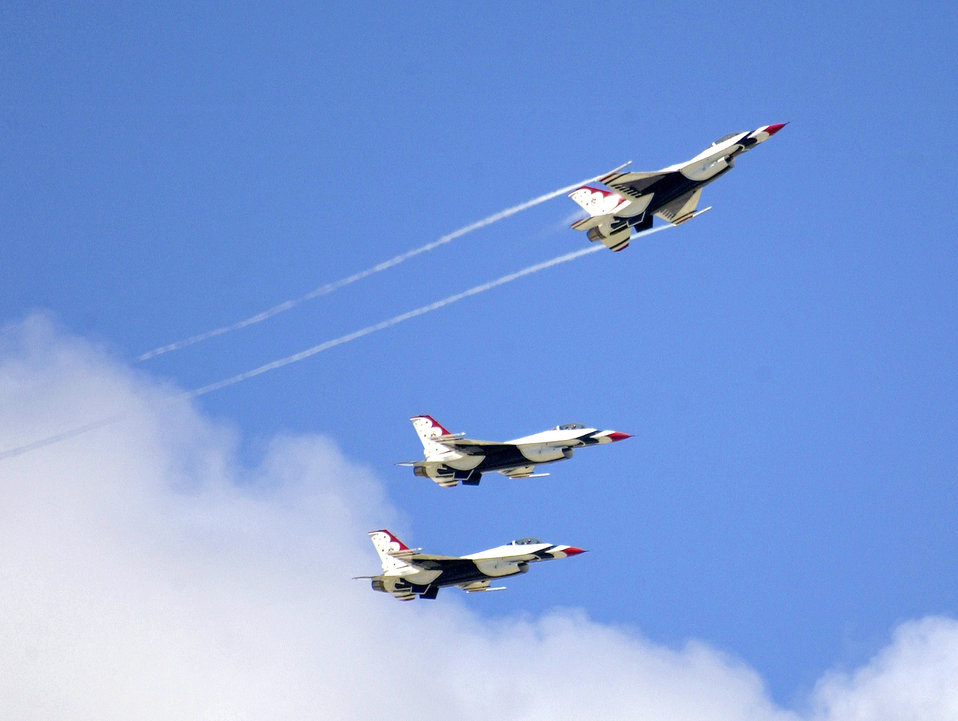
Airmen make an F-16 'Thunder-ready'

ANDERSEN AIR FORCE BASE, Guam -- Thunderbird pilots prepare to land here Sept. 9. Airmen from the U.S. Air Force Air Demonstration Squadron recently spent five months turning a gray combat-ready F-16 Fighting Falcon into a red, white and blue team aircraft.